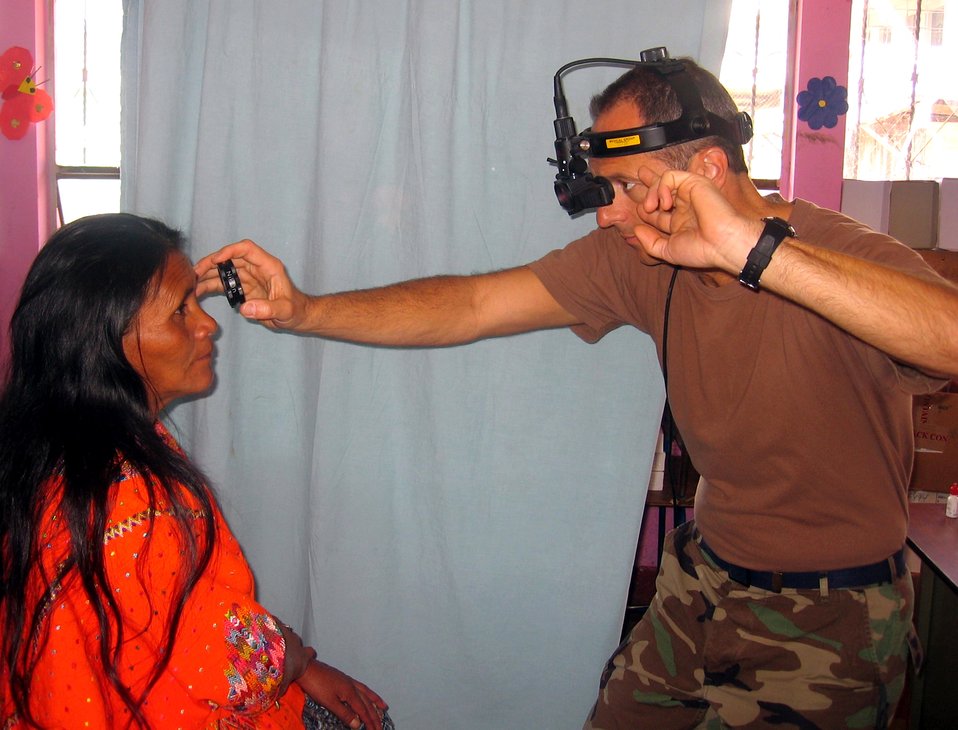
Air Force medics provide medical relief in Guatemala

Lt. Col. (Dr.) Timothy Nelson, an optometrist from Vandenberg AFB, Calif., tests the eyesight of a Guatemalan woman. Doctor Nelson issued more than 1,000 pairs of eyeglasses during a 10-day medical humanitarian visit by 13 Air Force Space Command medical professionals. The team saw more than 8,000 patients during that time.